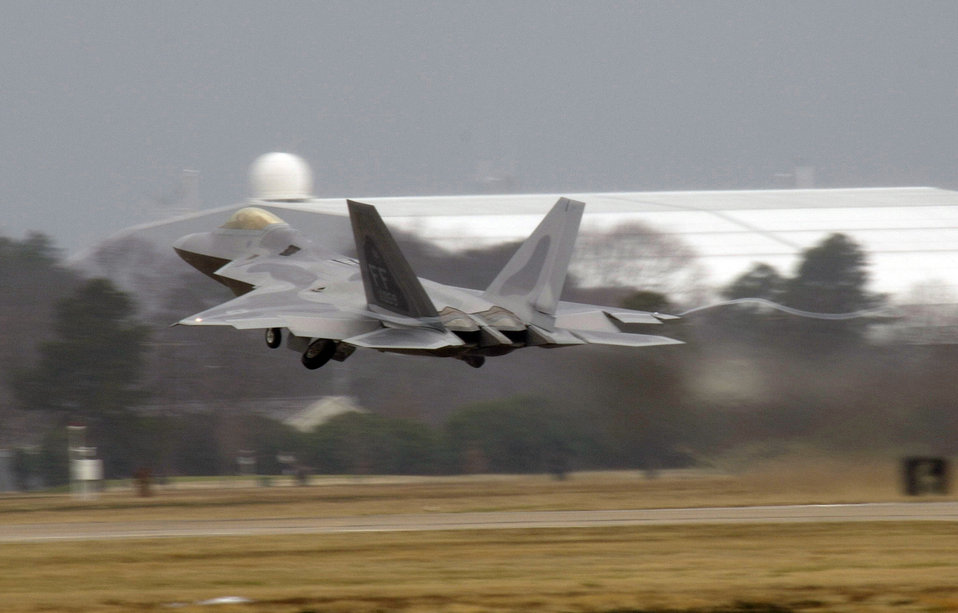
F-22s set for first overseas deployment

An F-22 Raptor takes off from Langley Air Force Base, Va. F-22s and Airmen from Langley's 27th Fighter Squadron are deploying to the Pacific in February.